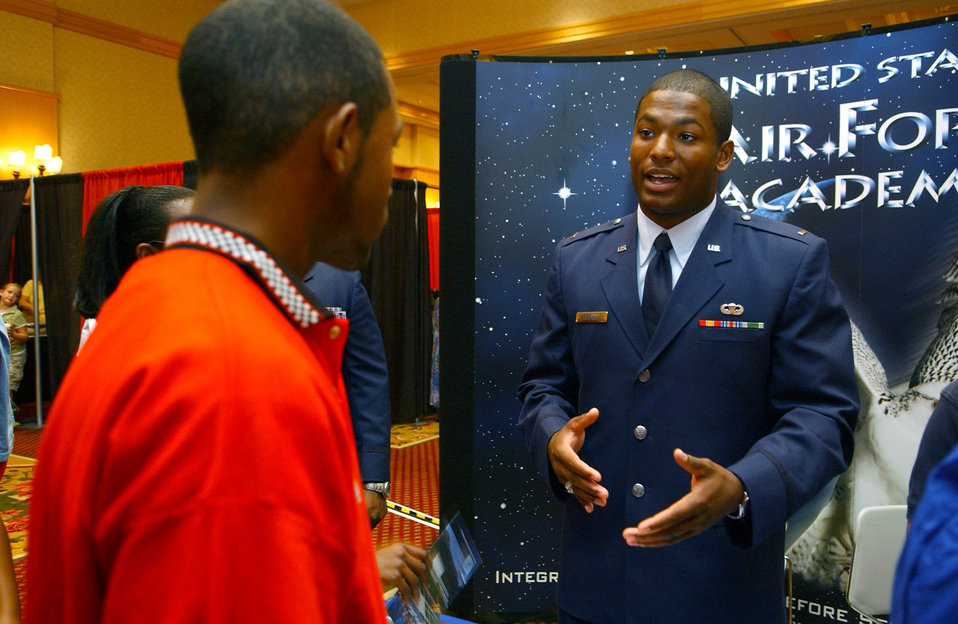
Tuskegee Airmen

Second Lt. Jarod Gilmer speaks with Isaiah Steele of Surprise, Ariz., about the Air Force Academy during the Tuskegee Airmen, Inc., 35th Annual National Convention in Phoenix on Aug. 3. The organization exposes minority youth to aviation and aerospace technology. Lieutenant Gilmer is an academy admission adviser.